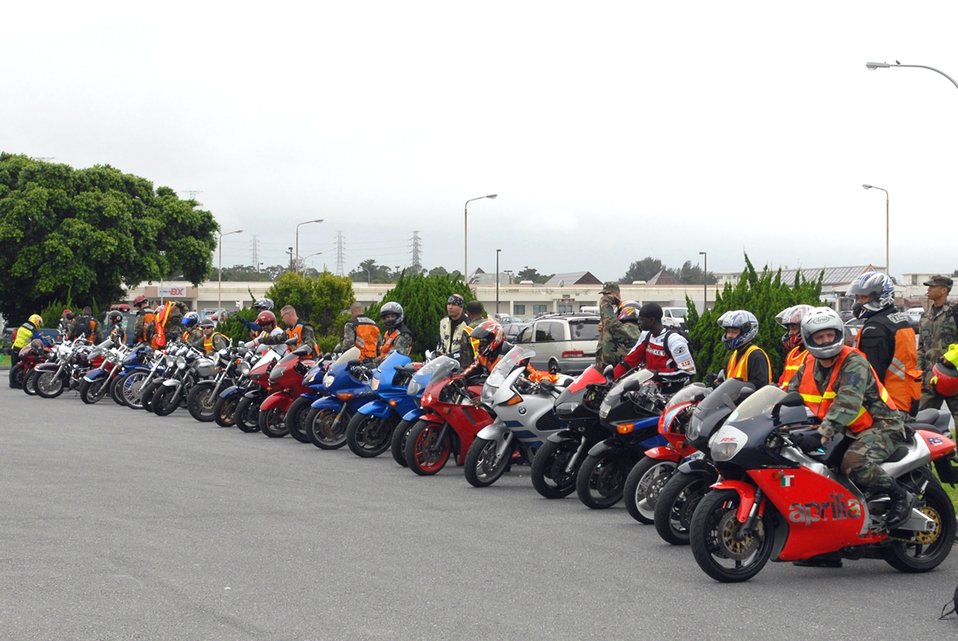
Motorcycle ride increases safety awareness

A procession of more than 70 bikes and riders participated in the first Kadena Motorcycle Ride June 11 at Kadena Air Base, Japan. Safety officials held the event to promote motorcycle safety.